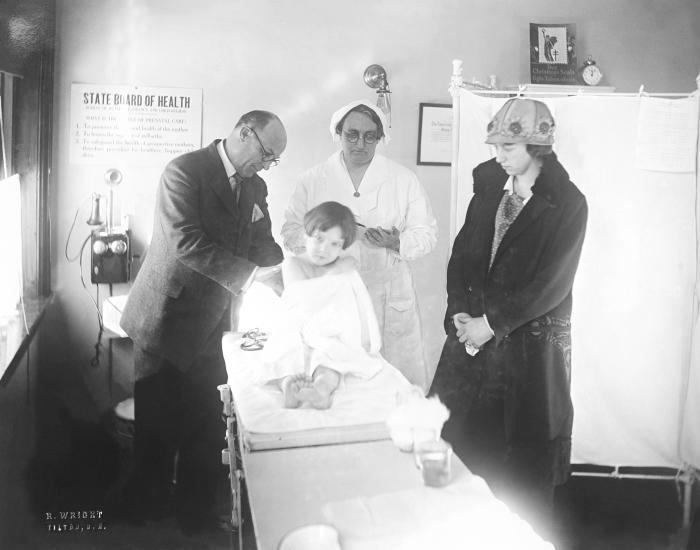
In this historic photograph, a mother who had brought her child to the physician's office, was watching the doctor (left), and a nurse (middle) as they were examining her daughter. The setting took place in the state of New Hampshire. Note the 'State Board of Health' sign in the background towards the left. The original image was scanned from a glass lantern slide donated by the Minnesota Department of Health, and is one of a historical collection of documents and photographs devoted to observances of Child Health Day in the United States.